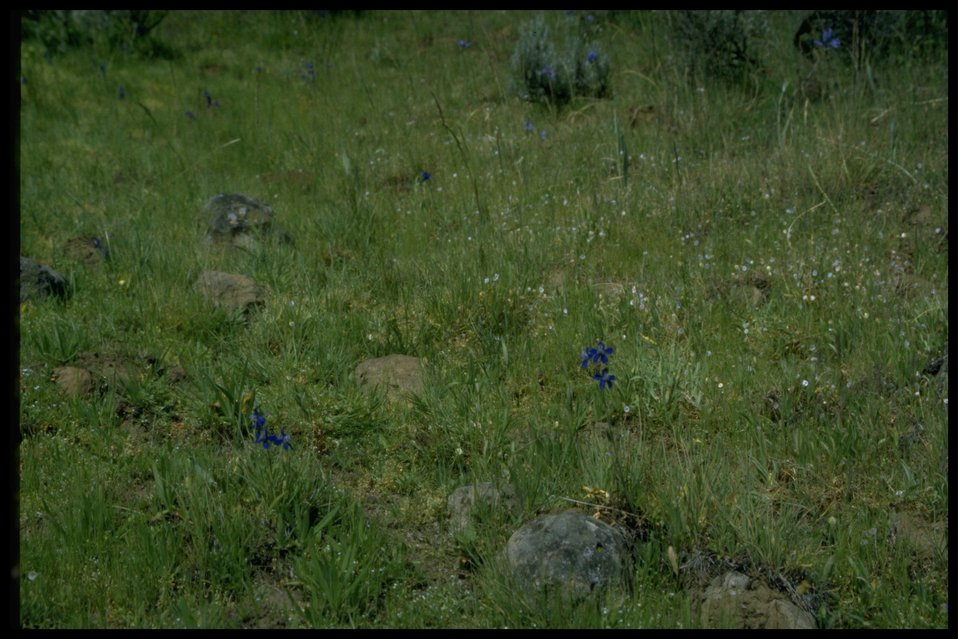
Farshot of vernal wet meadow habitat.